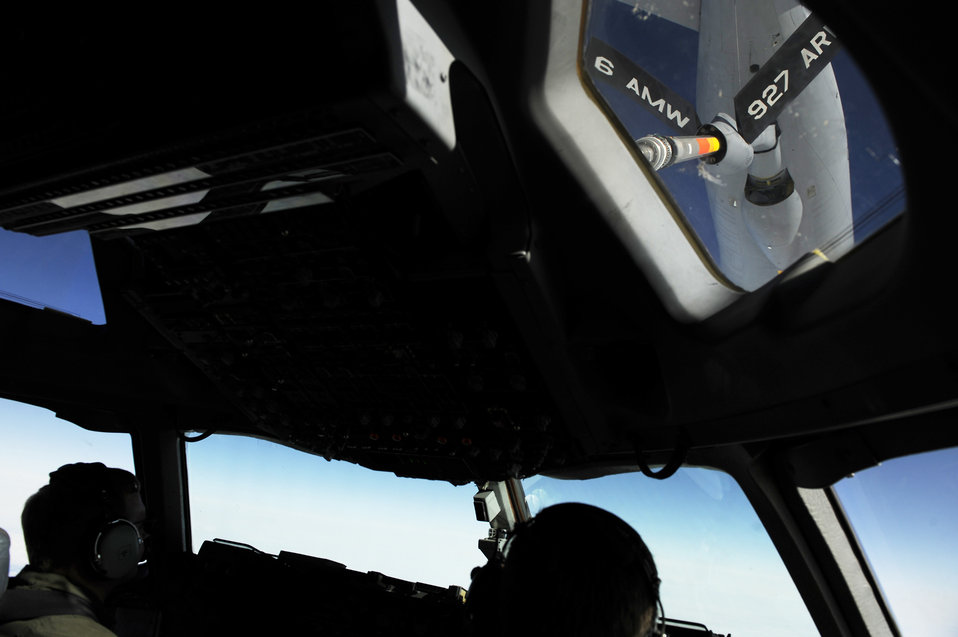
Charleston aircrew refuel near MacDill

Lt. Col. Brian Loehrke maneuvers a C-17 Globemaster III into position under a KC-135 Stratotanker during an air refueling mission near MacDill Air Force Base, Fla., March 12, 2010. Colonel Loehrke is from the 300th Airlift Squadron at Charleston AFB, S.C.